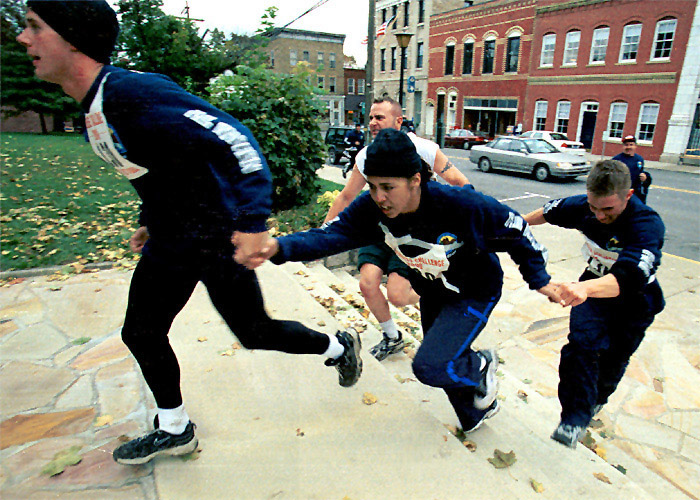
Wilderness Challenge

FAYETTEVILLE, W. Va. -- Team members from F.E. Warren Air Force Base, Wyo., race up the steps of the court house here during the end of the 5.5-mile run, the last event in a four-event competition sponsored by Navy Morale, Welfare and Recreation dubbed Wilderness Challenge 2000.